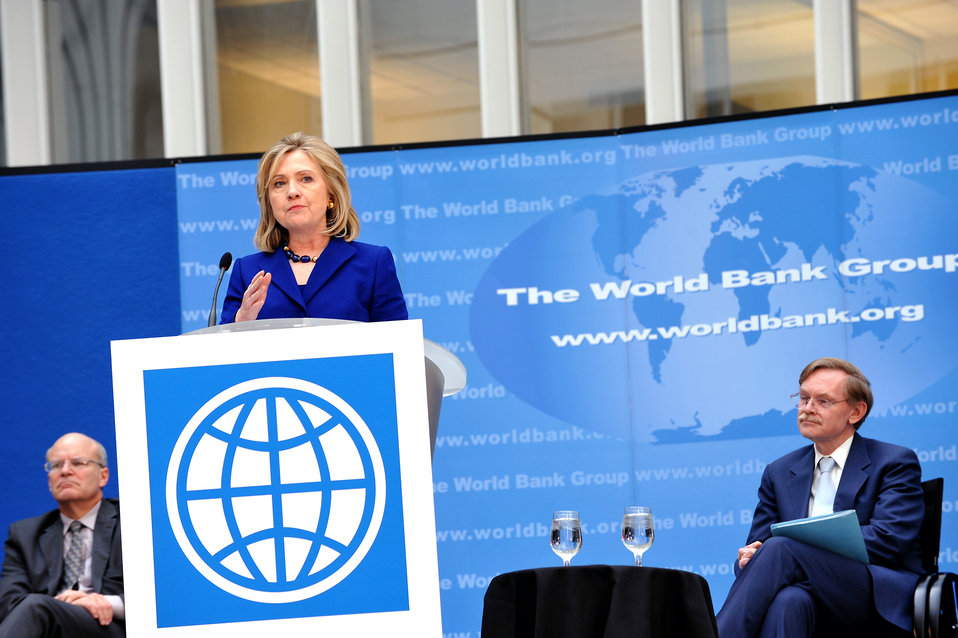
Secretary Clinton Delivers Remarks on World Water Day

U.S. Secretary of State Hillary Rodham Clinton delivers remarks on World Water Day in the World Bank Atrium in Washington, D.C., on March 22, 2011.